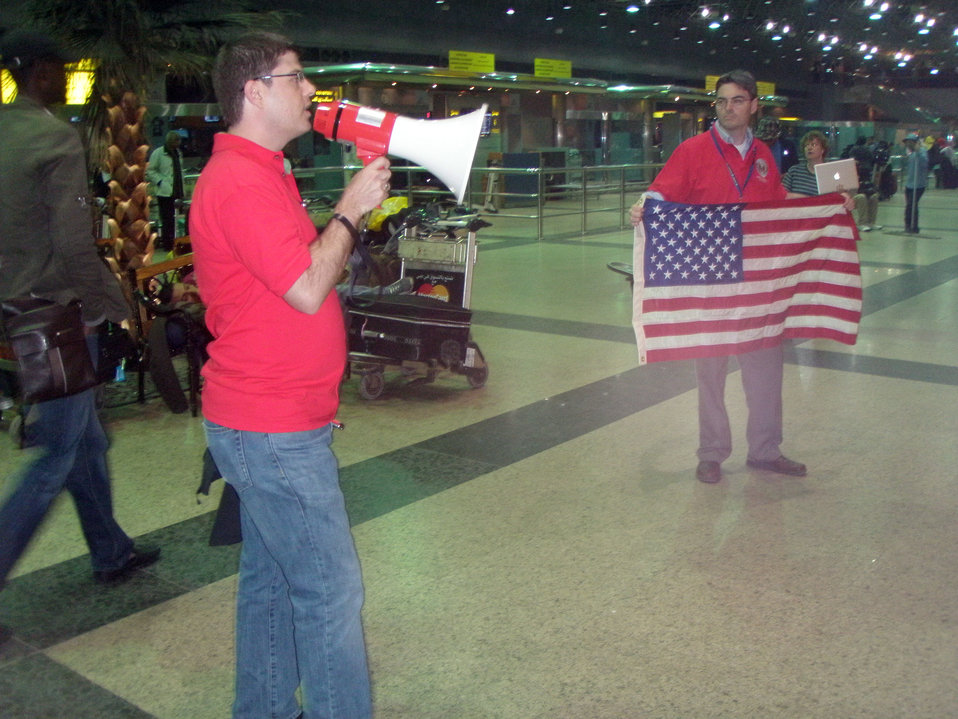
Public Diplomacy Officer Lenert and Chief Consul Buckley Search for Americans

Embassy Cairo Public Diplomacy Officer Adam Lenert calls for Americans, while Embassy Riga Chief Consul Tim Buckley holds an American flag, at the Cairo International Airport in Egypt on February 7, 2011.